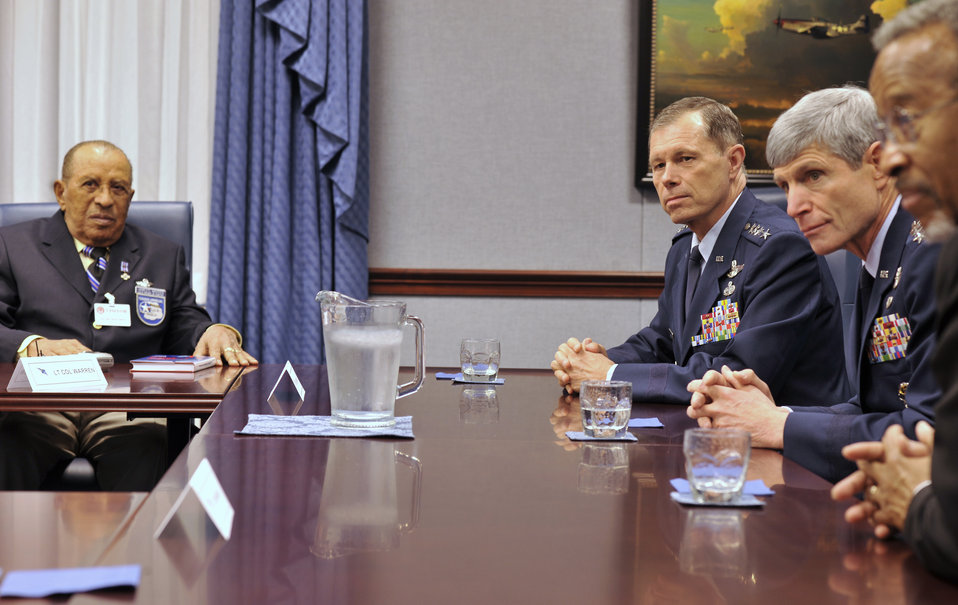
Tuskegee Airmen visit Pentagon

Retired Lt. Gen Russell Davis (far right) and Tuskegee Airmen including James Warren meet with Air Force Vice Chief of Staff Gen. William Fraser III and Chief of Staff Gen. Norton Schwartz in the Pentagon April 20. Four Tuskegee Airmen and General Davis were in Washington to meet with General Fraser and General Schwartz prior to departing on a tour of units in Southwest Asia including the 332nd Air Expeditionary Wing whose origins trace back to the 332nd Fighter Group and the Tuskegee Red Tail Flyers.